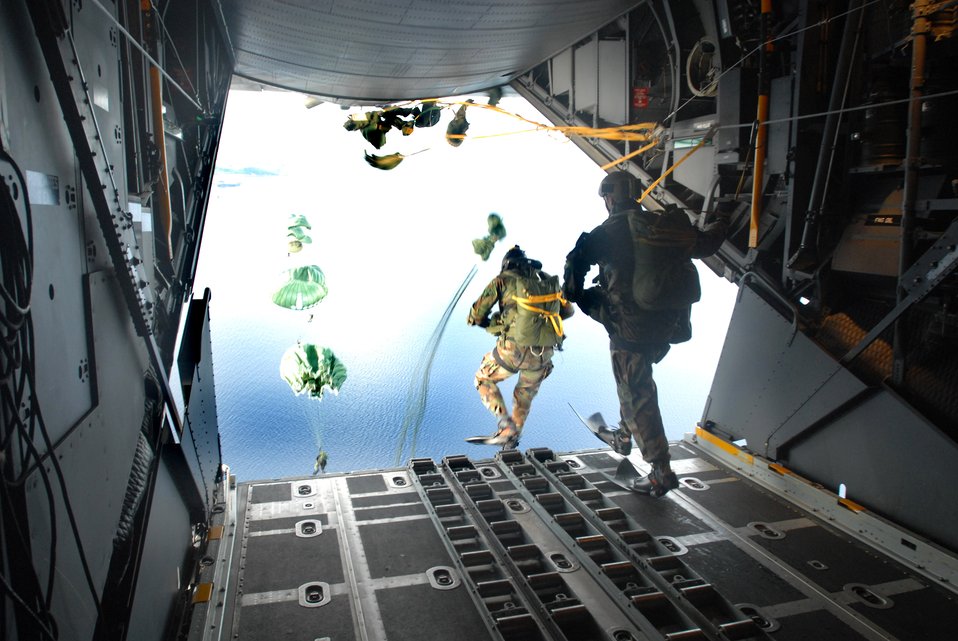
Mass casualty exercise

Pararescuemen from the 31st Rescue Squadron perform a static-line jump out of a C-130 Hercules over water near Kadena Air Base, Japan. The 18th Wing and the 353rd Special Operations Group conducted a mass casualty exercise to test the rescue and emergency care capabilities of Kadena AB. The exercise partnered seven Air Force squadrons in a land, sea and air training operation involving search and rescue, mass casualty field triage, medical patient loading and transport